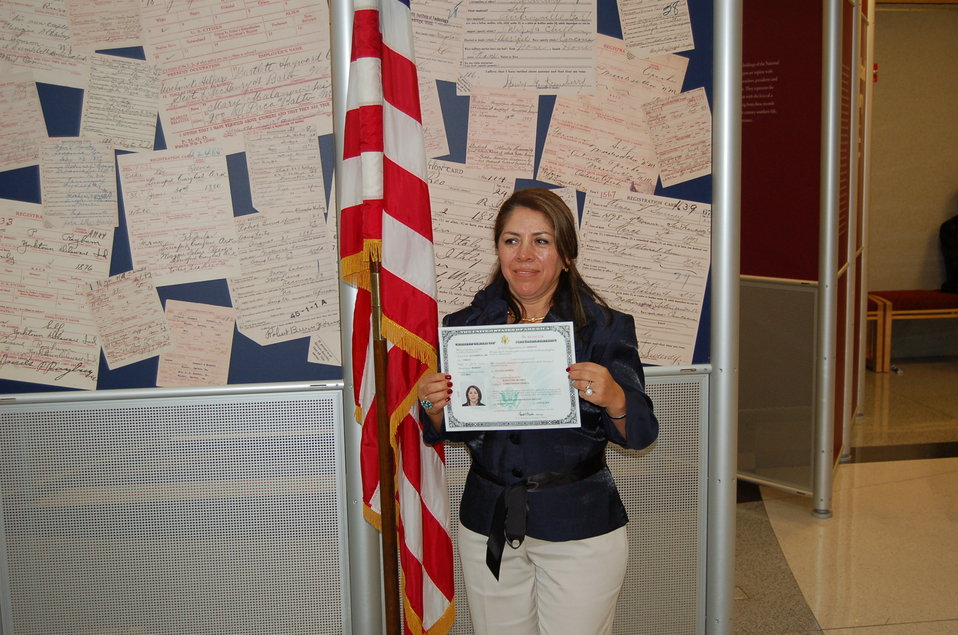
New Citizens